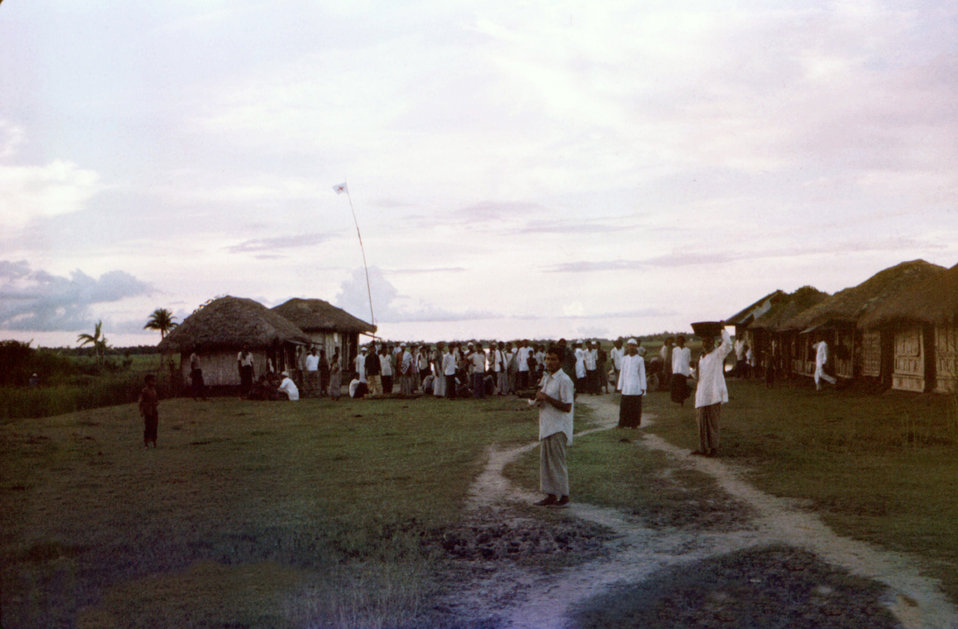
This September, 1975 image captured a gathering of Bangladeshi shoppers at the Lord Hardinge Bazaar on one of its market days. The thatched huts are occupied only on market days. In rural Bangladesh, only the men go to the market.